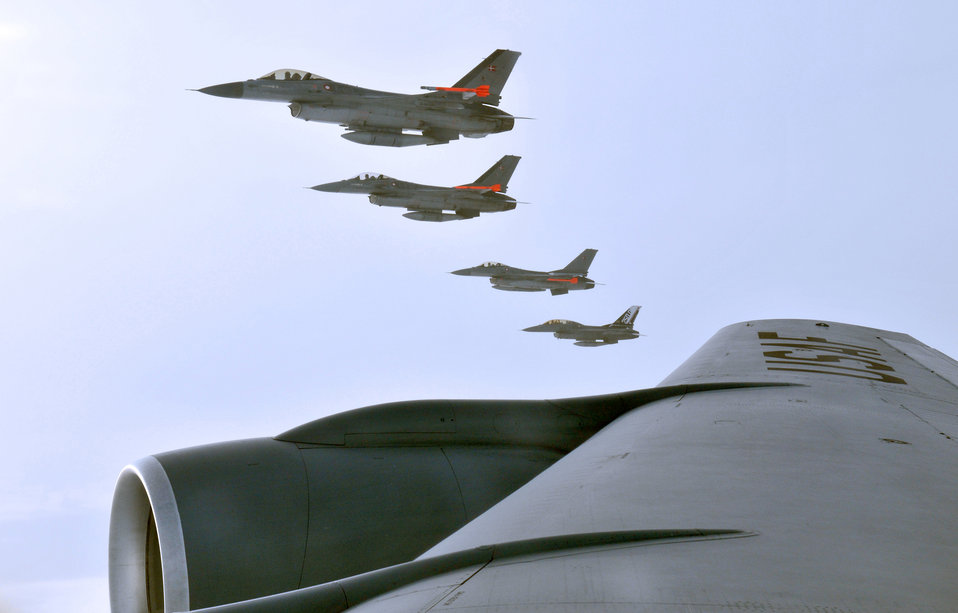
Refueling lifeline of U.S., NATO air ops

Four Royal Danish air force pilots fly F-16 Fighting Falcons in formation off the wing of a KC-135 Stratotanker during a refueling mission over Denmark Dec. 8, 2009. In all, the Royal Air Force Mildenhall-based KC-135 refueled 30 aircraft and pumped more than 40,000 tons of fuel.